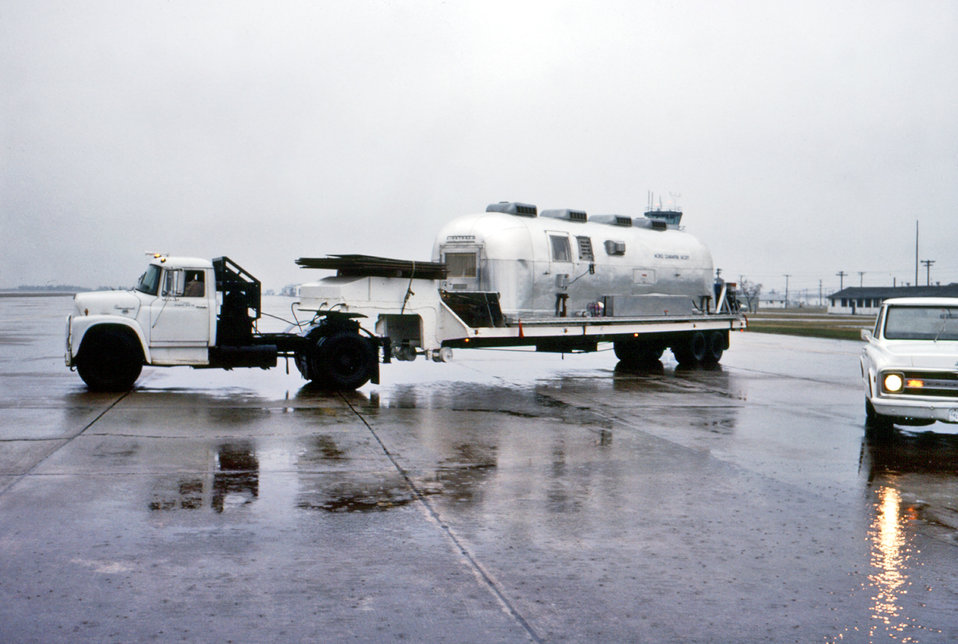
This photograph showed a mobile quarantine facility (MQF), just before it was loaded on to a C-141 jet that was about to transport this unit to Atlanta, GA.